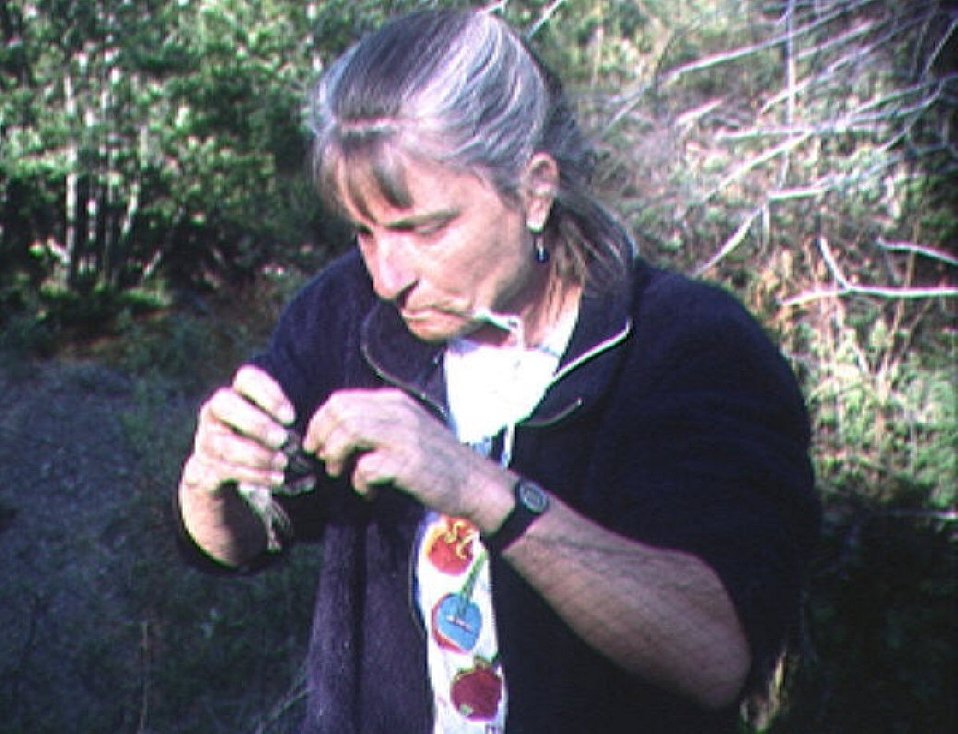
People Salmon Field Office UCSC Upper Columbia Salmon Clearwater District